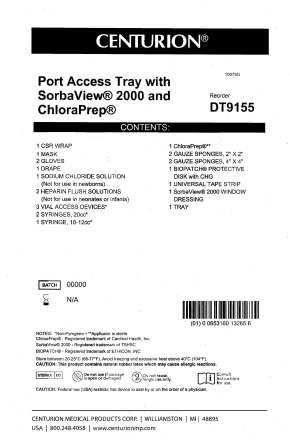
RECALLED - Convenience kits which contain bacteriostatic sodium chloride solution by American Regent

April 1, 2011 - Product Recall - Centurion Medical Products Initiates Voluntary Recall of Customized Convenience Kits (including select Central Venous Catheter, PICC Insertion, and VAD Trays) that contain American Regent’s Bacteriostatic Sodium Chloride Injection, USP, 0.9% 30 mL Multiple Dose Vials.